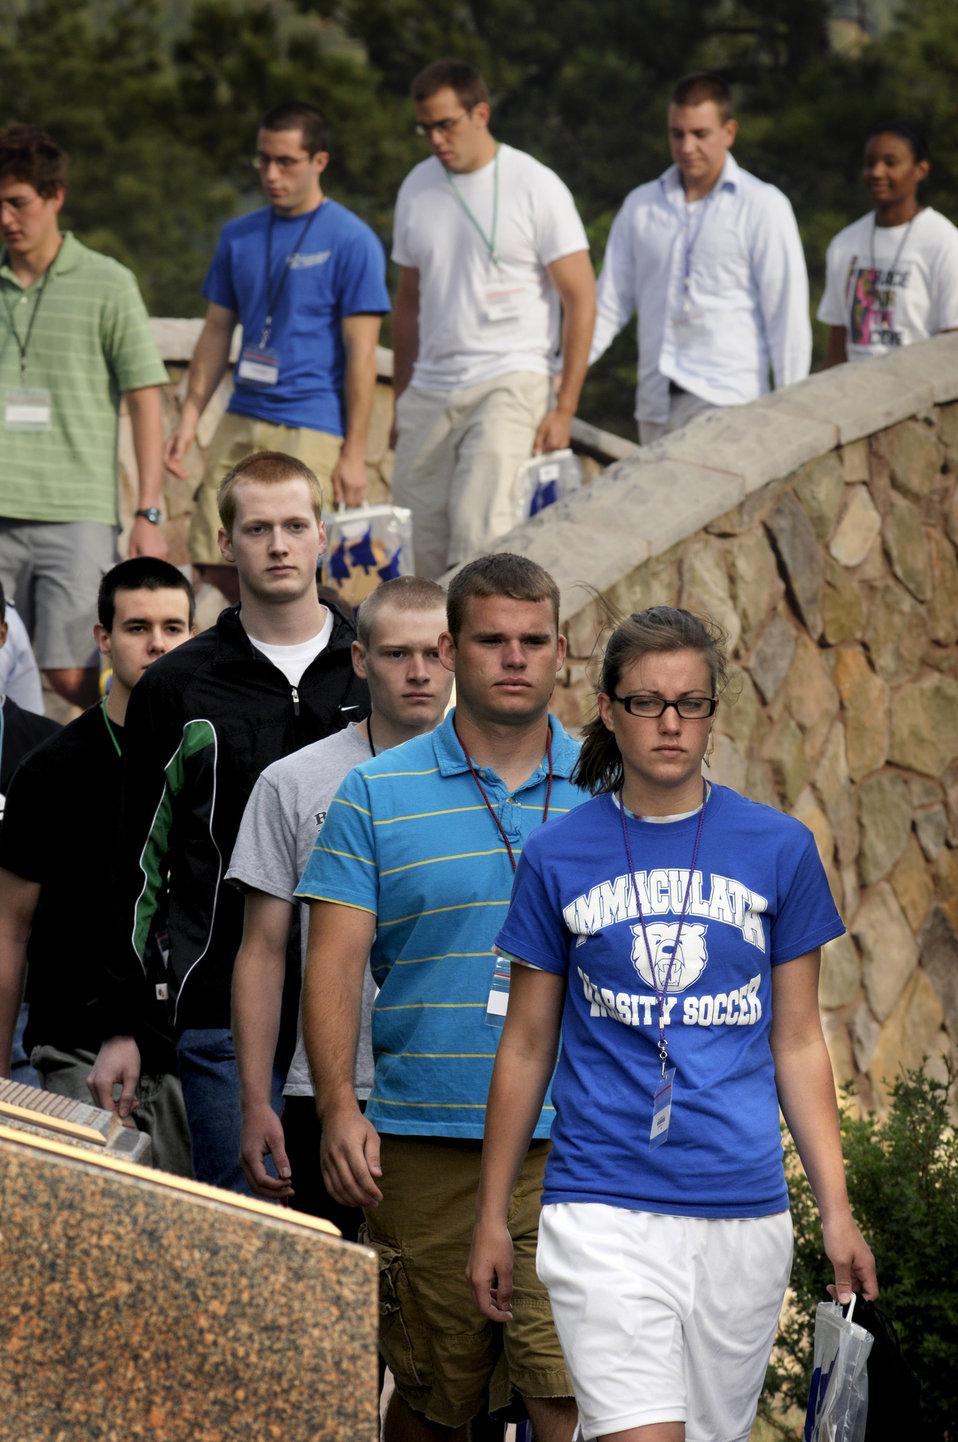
Class of 2012 arrives at Academy

Members of the Class of 2012 cross the Heritage Bridge at Doolittle Hall before boarding buses that will take them to the base of the Core Values Ramp June 26 at the U.S. Air Force Academy, Colo. Inprocesing marks the start of 38 days of Basic Cadet Training, which is designed to prepare basic cadet trainees for entry into the cadet wing.